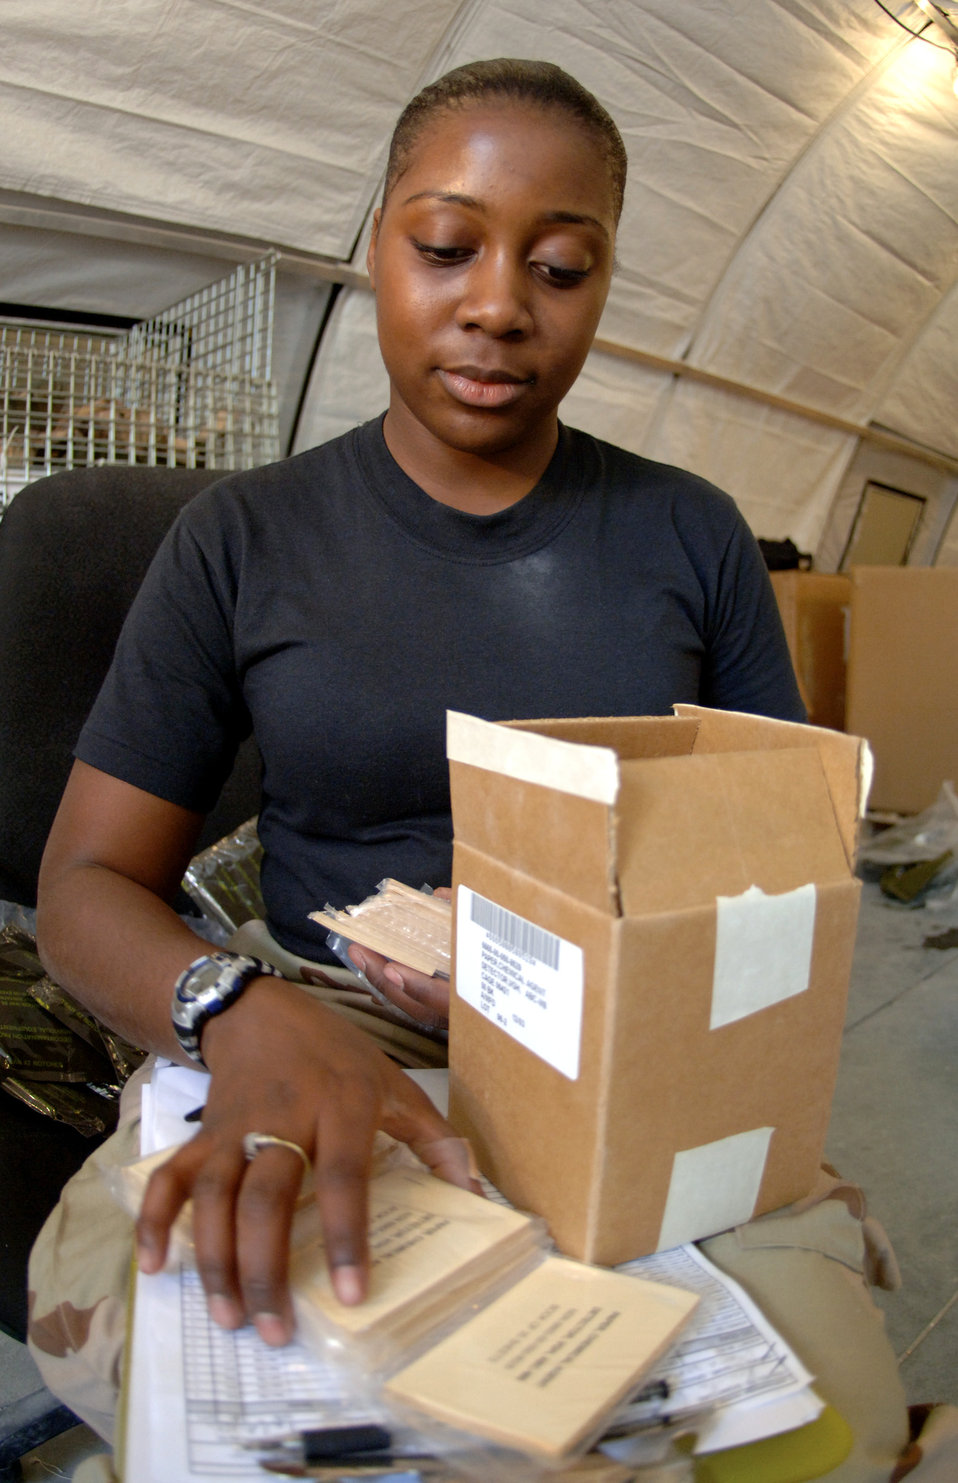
Center saves millions, improves warfighting abilities

Senior Airman Elether Fareaux counts paper while replenishing supplies at the Expeditionary Theater Distribution Center at a deployed location in Southwest Asia on Thursday, May 18, 2006. Airman Fareaux is with the 379th Expeditionary Logistics Readiness Squadron and is deployed from Dover Air Force Base, Del.